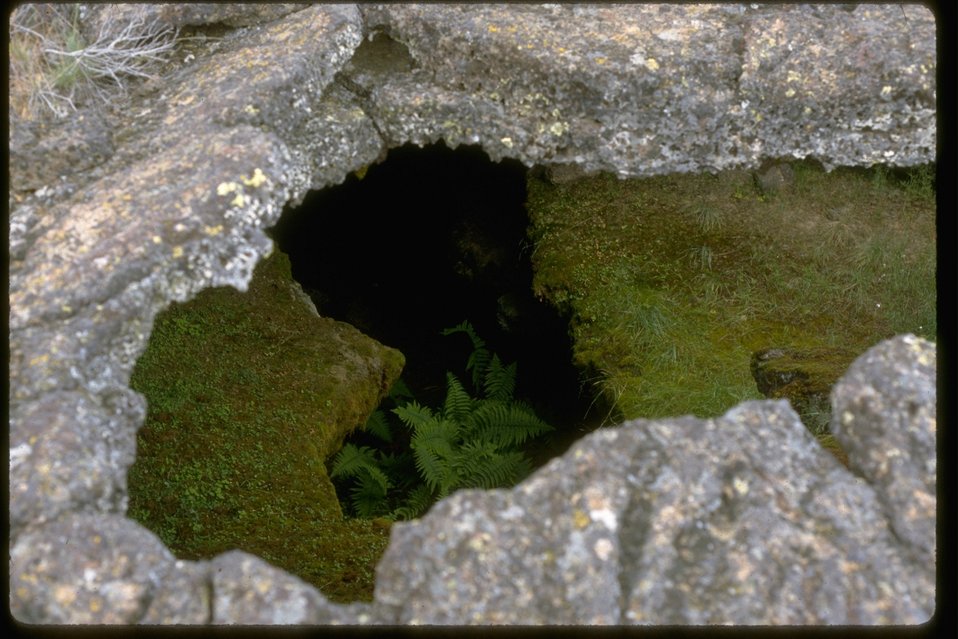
Lava tube ferns growing in opening at Clarks Butte Wilderness Study Area. OR 3-120